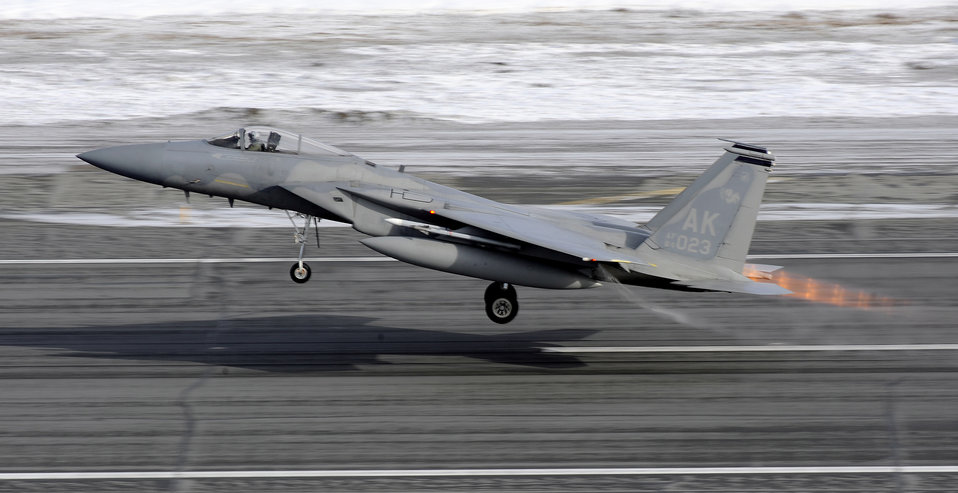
Operations group validates new capability

An F-15 Eagle takes off prior to a live fire training mission over an Alaskan range April 7, 2010, at Elmendorf Air Force Base, Alaska. The air-to-air gun mission consisted of a Cessna Conquest towing an aerial banner 2,000 feet behind it while two F-15 Eagles took turns firing at the banner.